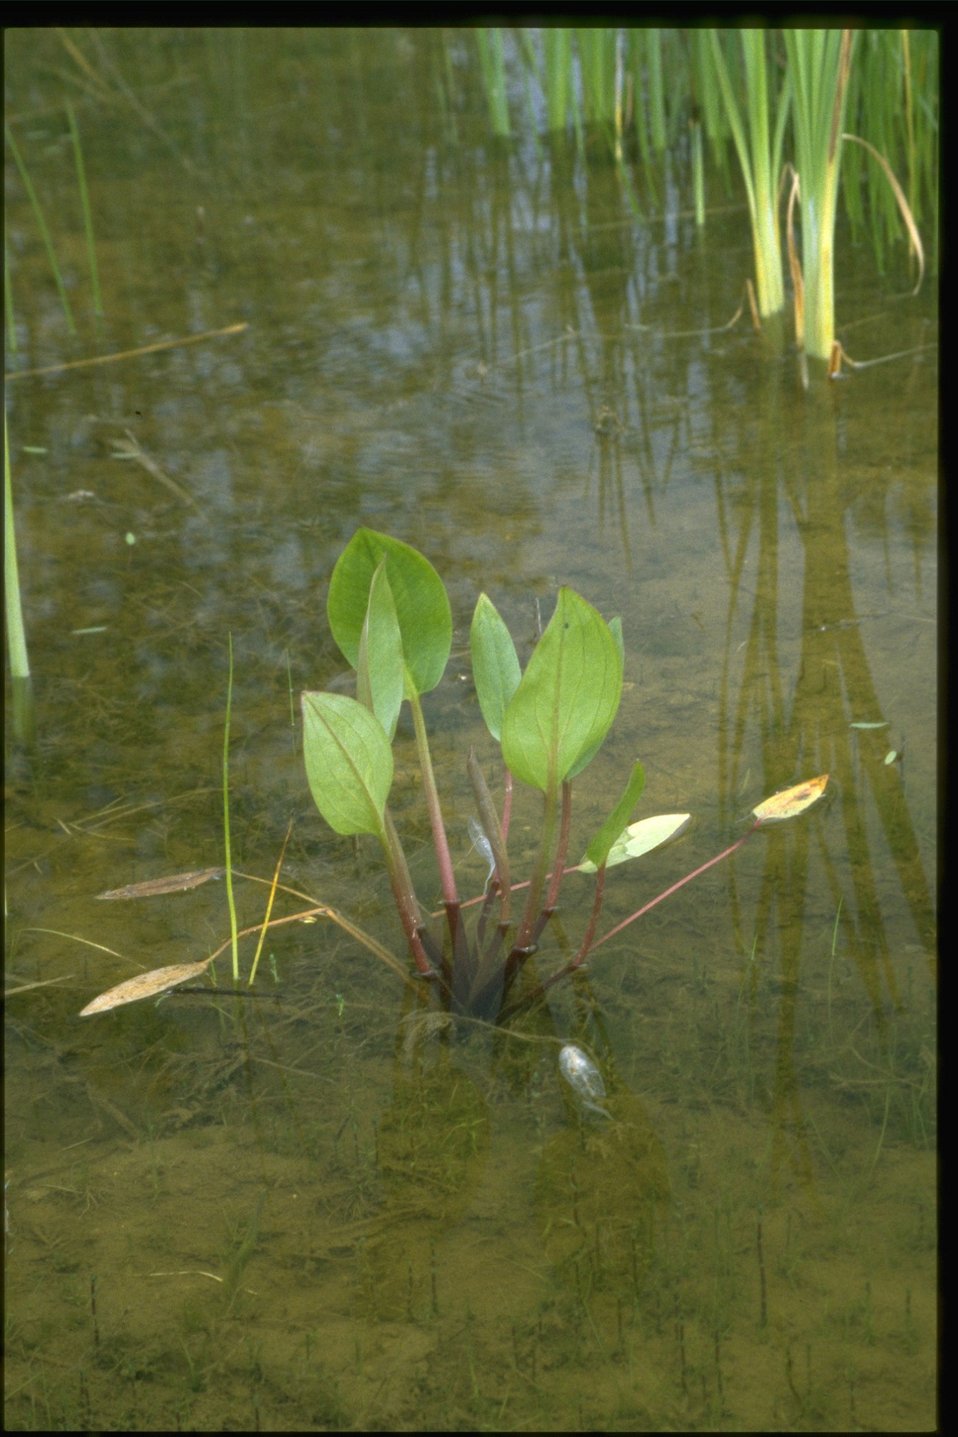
Medium shot of Alisma.